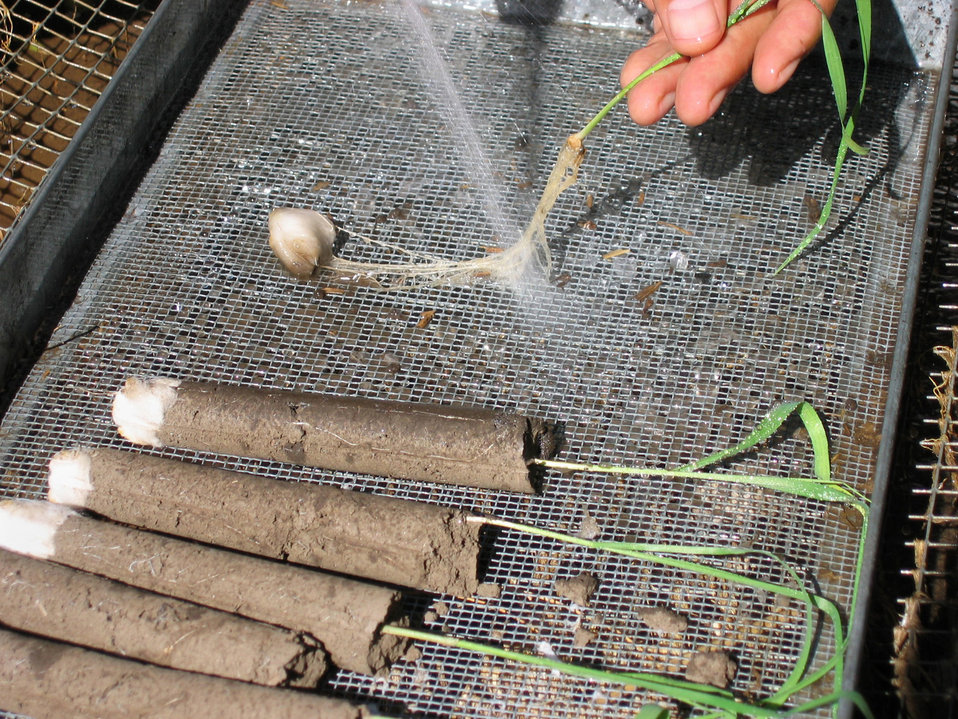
Wheat roots are washed to assess disease severity and root growth following a bio control treatment on July 26, 2005.